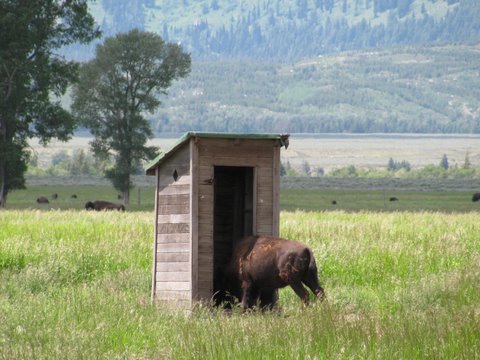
Endless Caption Possibilities

Generally, we only include photos taken on the National Elk Refuge in our photo gallery. This one, however, was too precious not to include. A refuge volunteer shot this picture in Grand Teton National Park, which borders the National Elk Refuge. When the bison later migrated to the refuge in winter, it may have been disappointed in the lack of facilities we offer the wildlife!
'Anybody in here?'

Credit: USFWS / Gaylia Hudgins, National Elk Refuge volunteer